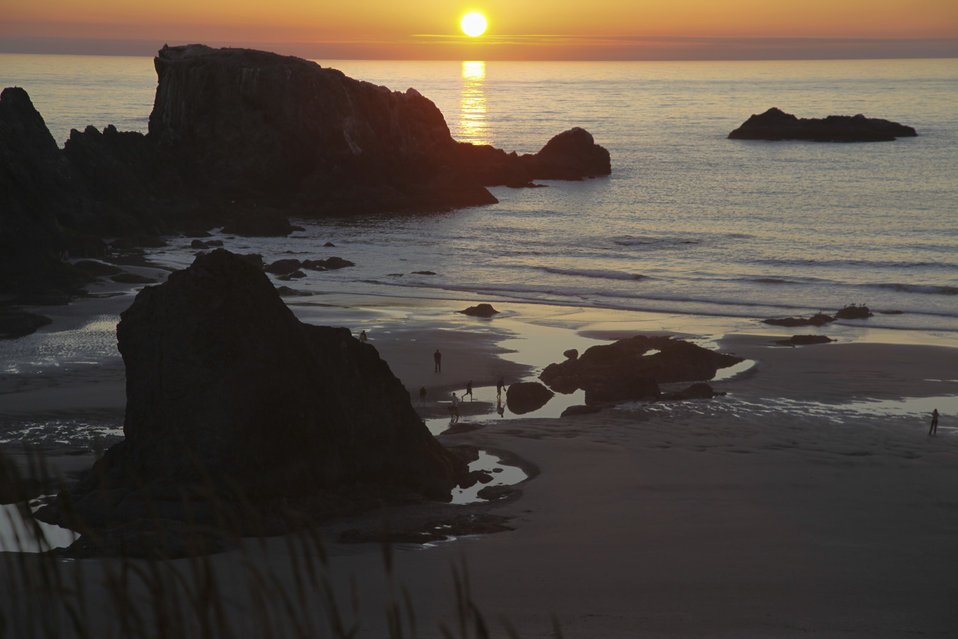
Coquille Pt Sunset